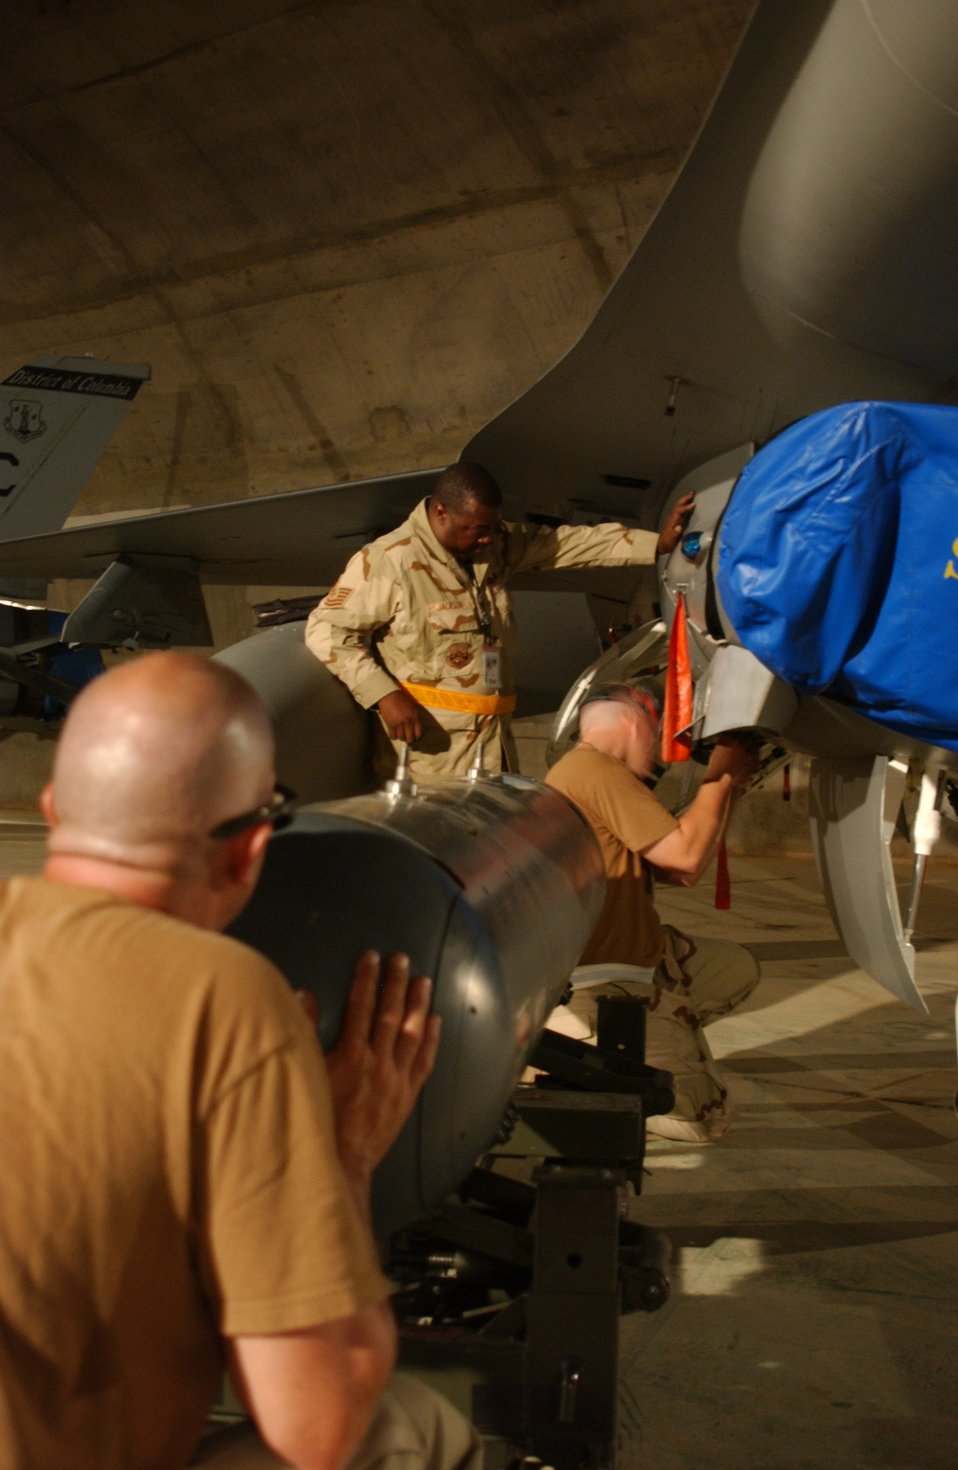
Aircraft swap helps maintain capabilities

Maintainers from the 332nd Expeditionary Aircraft Maintenance Squadron prepare an F-16 Fighting Falcon for a reconnaissance pod at Balad Air Base, Iraq, Sept. 20. Maintainers brought newly arrived Guard F-16s online. The jet is one of many Guard jets from South Dakota, Michigan, New York, and Washington, D.C., that were swapped for Guard F-16s from Alabama and Illinois.